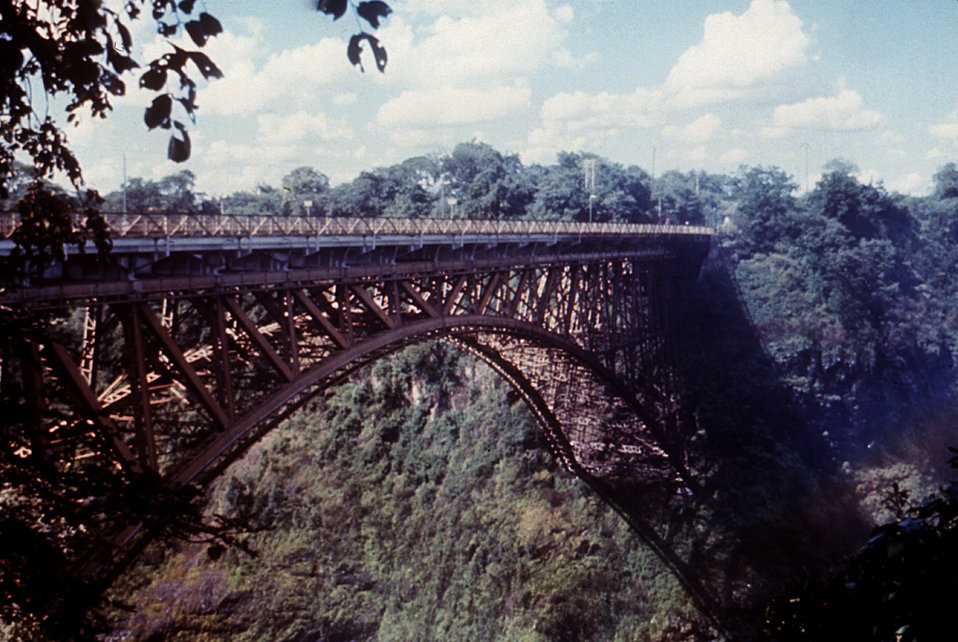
This bridge image was shot during a visit to Rhodesia, now Zimbabwe, by one of two travelers later treated for Marburg disease.